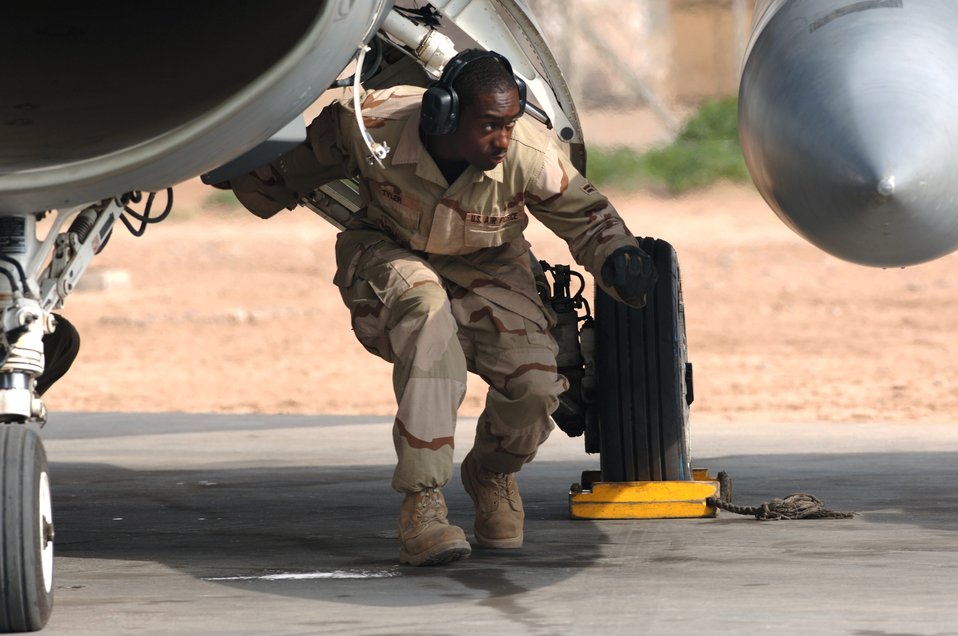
Falcons ready to leave the nest

Airman 1st Class Stephen Tyler emerges from under an F-16 Fighting Falcon after removing the safety pins before a mission Feb. 13 from Balad Air Base, Iraq. Airman Tyler is assigned to the 332nd Expeditionary Aircraft Maintenance Squadron from Aviano Air Base, Italy.